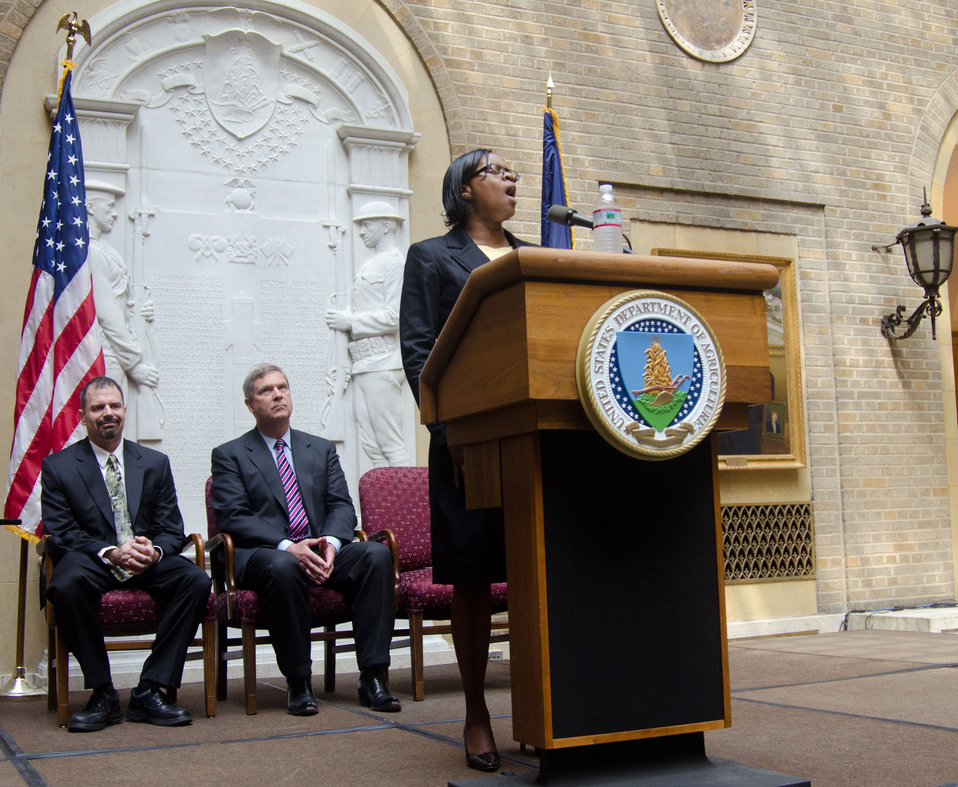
Donna Carter sang 'America the Beautiful” during the 2011 Unsung Hero Awards Program on Tuesday, May 3, 2011, at the U.S. Department of Agriculture Whitten Building in Washington, DC.